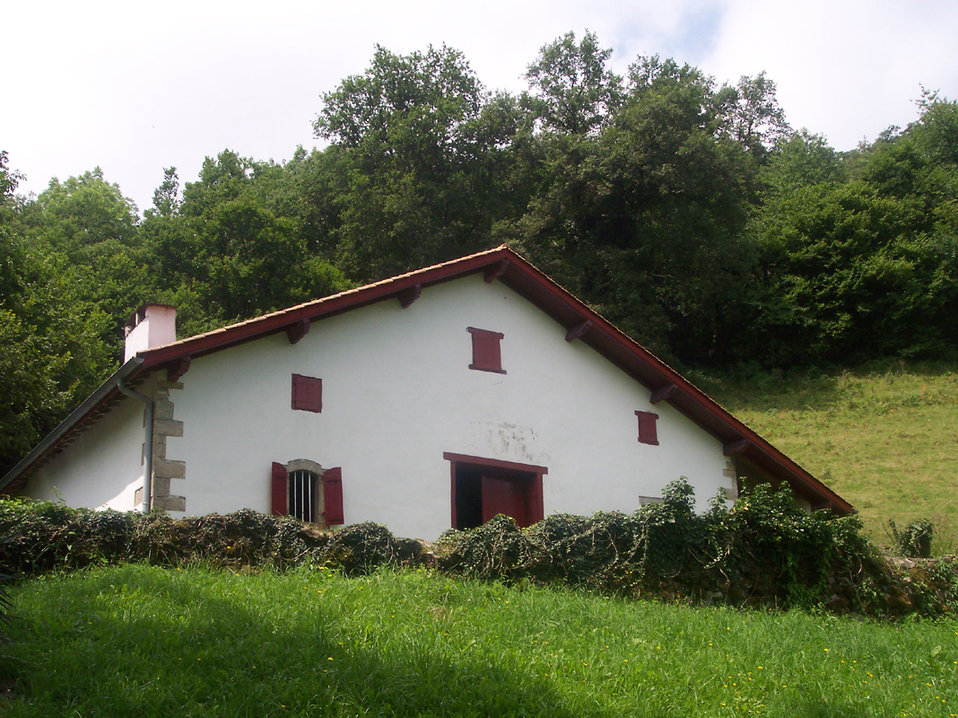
Italiano: Casa natale di Michele garicoits, fondatore della Congregazione francese cattolica dei Preti del Sacro Cuore di Gesù di Bétharram. Foto personale. Français : Maison de naissance de saint Michel Garicoïts dans le hameaux de Ibarre, dans les Pays basques français.